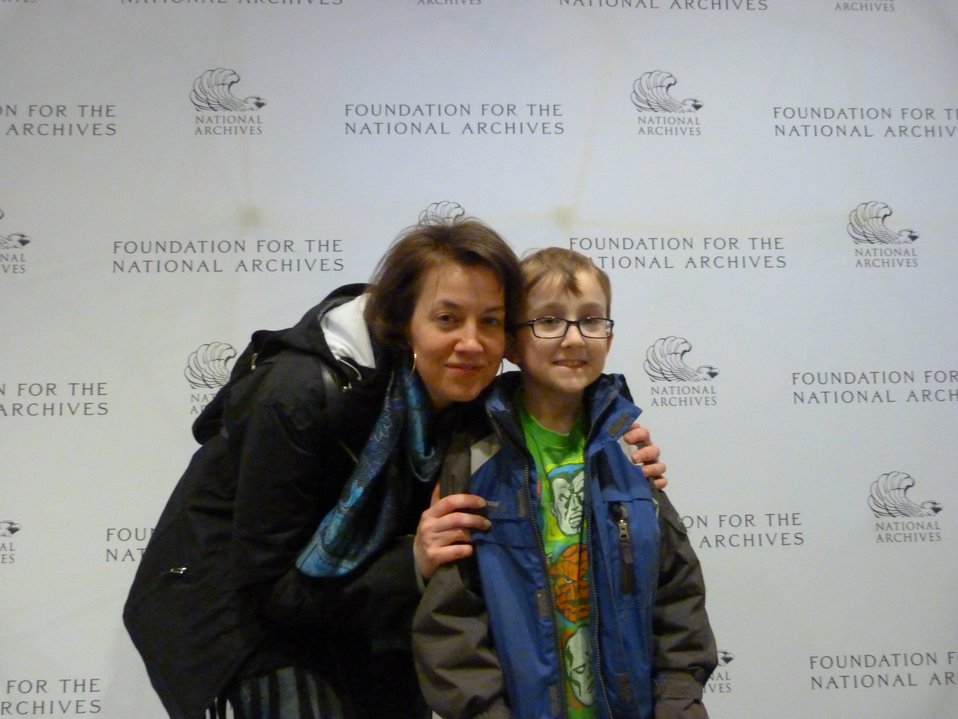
Rotunda Sleepover

Rotunda Sleepoverr; Photo provided by The Foundation for the National Archives